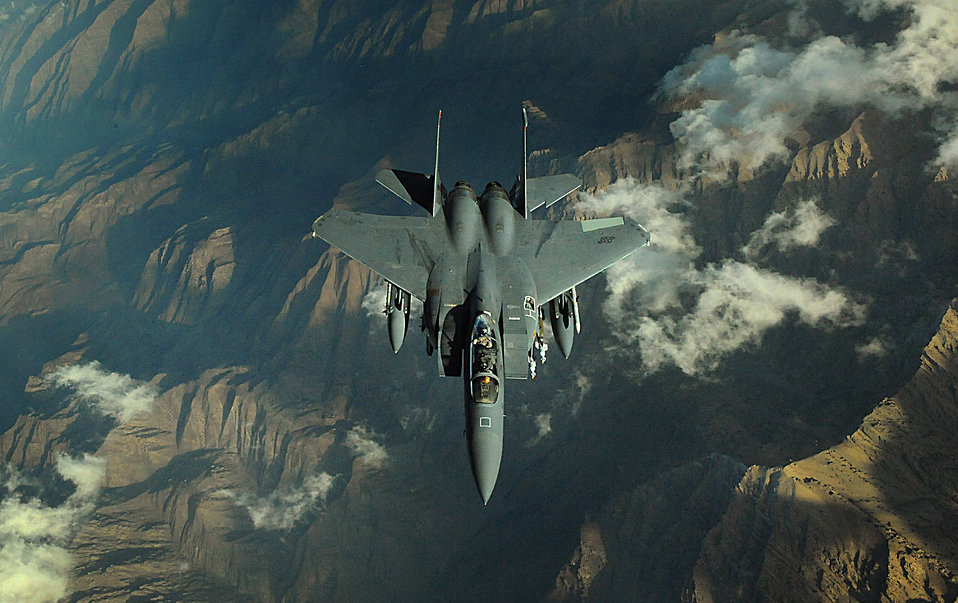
Dec. 10 airpower summary: F-15Es provide aerial protection

An F-15E Strike Eagle soars over Afghanistan providing close-air support and armed aerial overwatch to deter enemy activities. The Strike Eagle is a dual-role fighter designed to perform air-to-air and air-to-ground missions.